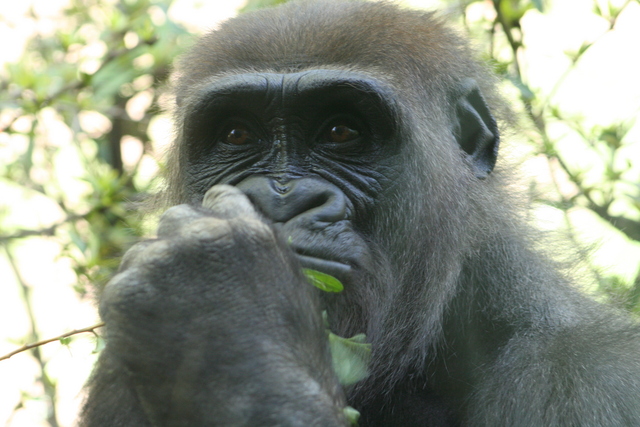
Gorilla